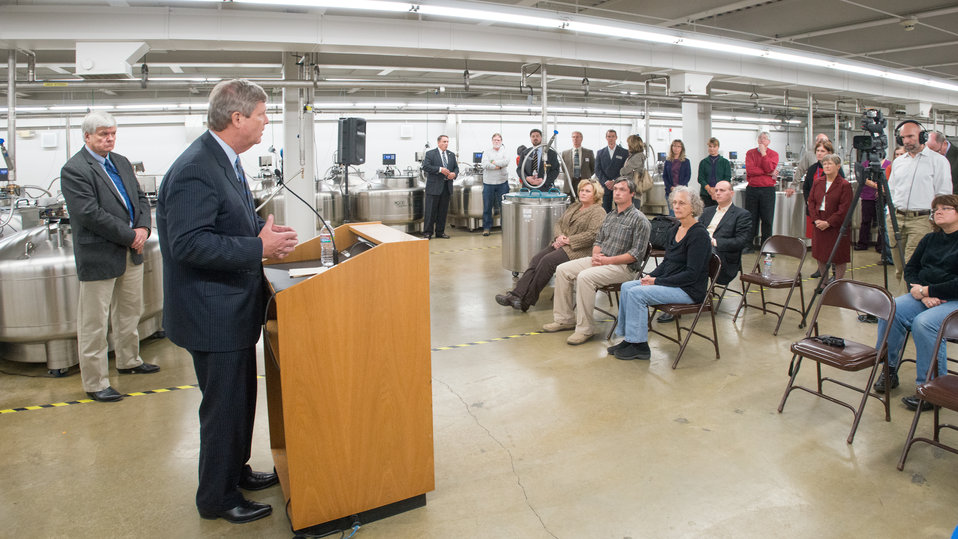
Agriculture Secretary Tom Vilsack speaks to staff and media at the U.S. Department of Agriculture's (USDA) Agricultural Research Service (ARS) National Center for Genetic Resources Preservation (NCGRP) in Ft. Collins, CO on Wednesday, Nov. 6, 2013. NCGRP is the largest agricultural gene bank facility in the U.S. The NCGRP staff conducts groundbreaking research to develop more efficient and effective means for preserving plant and animal germplasm, and for better understanding the genetic structure of these invaluable materials. Gene banks around the world have adopted the research findings, preservation techniques, and specialized technology developed by the NCGRP: many international scientists travel to the NCGRP for research and training.